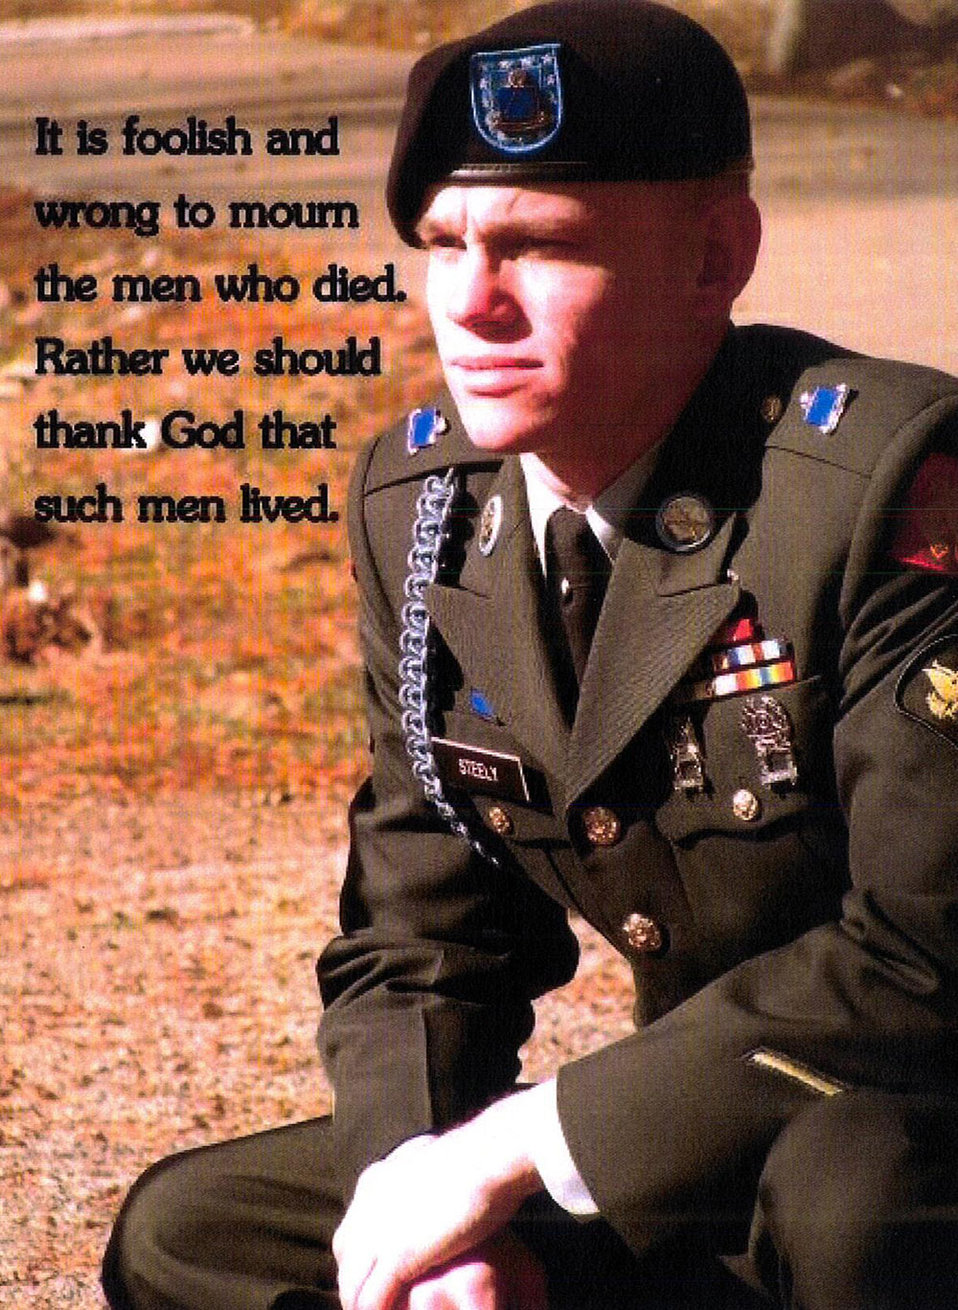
Tim Steely

Timothy Steely is part of the Wounded Warrior Project. From Ardmore, Oklahoma, Steely is an Infantry Specialist for the Army National Guard. After graduating from high school in 2006, Steely joined the Army National Guard in 2007 through 2008, and was deployed to Iraq. After his deployment, Steely began working toward a degree in Criminal Justice. Then, in 2011, he was deployed a second time, this time to Afghanistan. Now home from his second deployment, Steely has received his associate’s degree and is working toward a bachelor’s degree. Today Steely works for the Fish and Wildlife Service in our Ecological Services Field Office in Tulsa, Oklahoma.